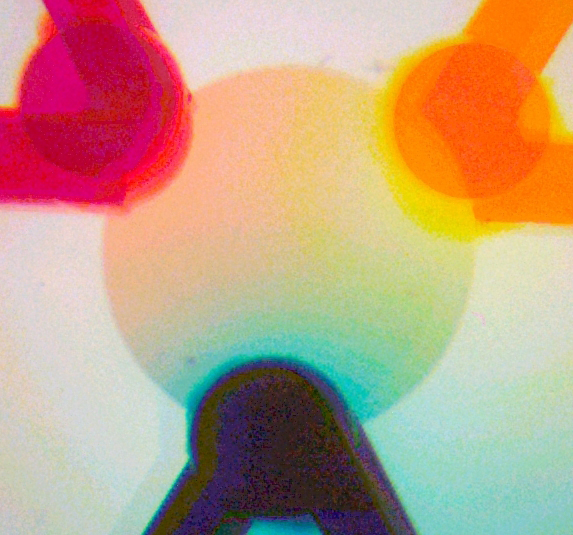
Microfluidic Palette

For each of the three dyes injected into the NIST microfluidic palette, an independent gradient forms that remains constant as long as flow into the system does not change. Overlapping the three gradients results in a blend of dye concentrations, but the combination of colors in any single location is distinctly different from all others location.

See also 'Microfluidic Palette' May Paint Clearer Picture of Biological Processes